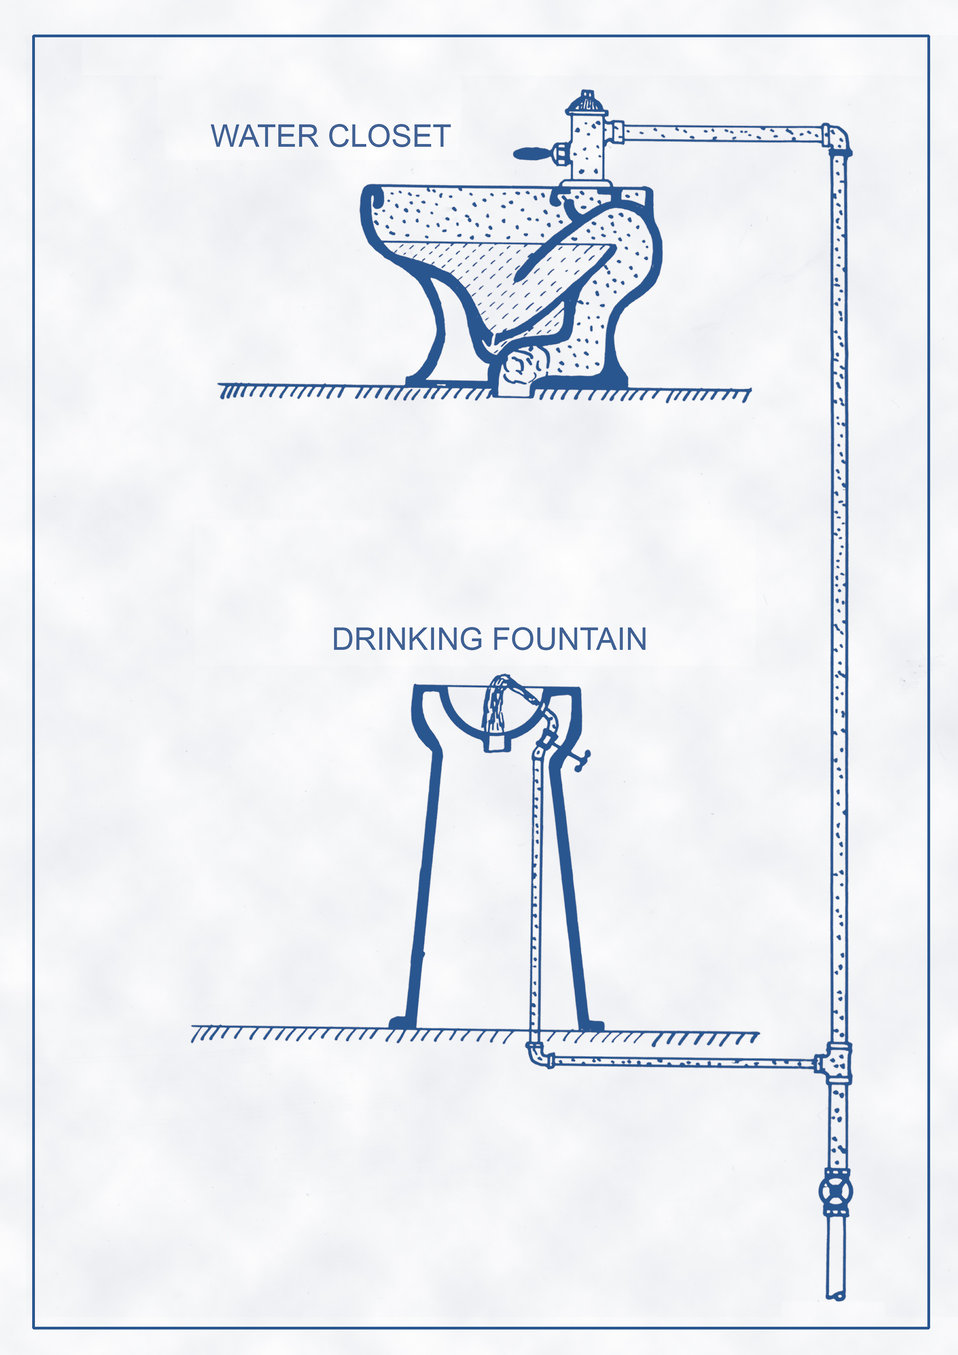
This historic 1936 diagram, which had been digitally enhanced and colorized, illustrated in cross-connection, a water supply as it supplied a water closet equipped with a 'flushometer' valve, as well as a drinking fountain. This was one of a series of instructional drawings used by the Minnesota Board of Health to train its state public health workers.